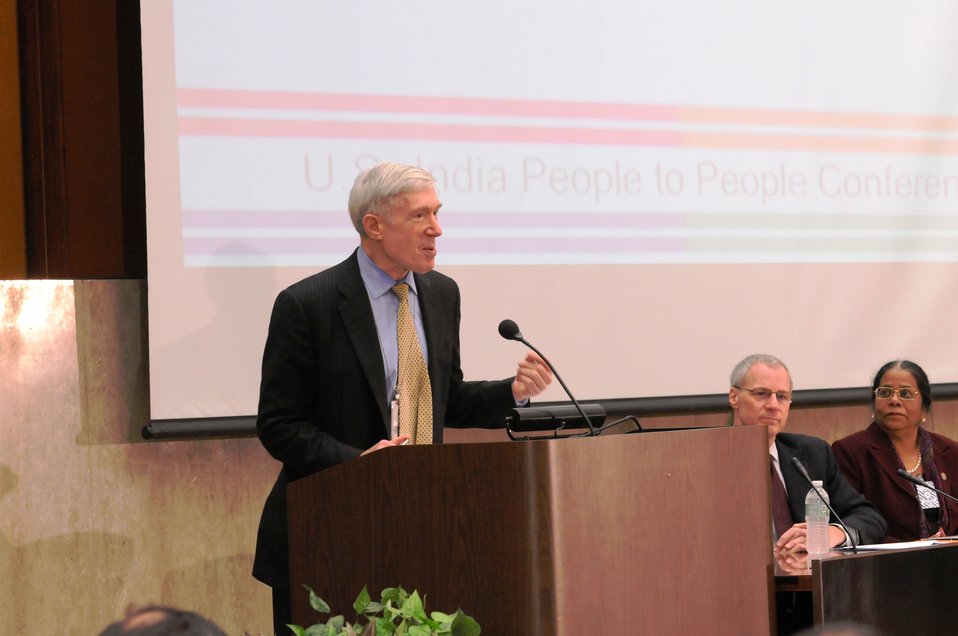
Under Secretary Hormats Delivers the Welcoming Remarks

U.S. Under Secretary of State for Economic, Energy and Agricultural Affairs Robert D. Hormats delivers the welcoming remarks at the U.S.-India People to People Conference held at the U.S. Department of State in Washington, D.C., on October 28, 2010. Other individuals in the photo include: Ron Somers, President of US-India Business Council (USIBC) (right) and Dr. Kamala Edwards, President of Indian American Leadership Council (IALC) (far right).